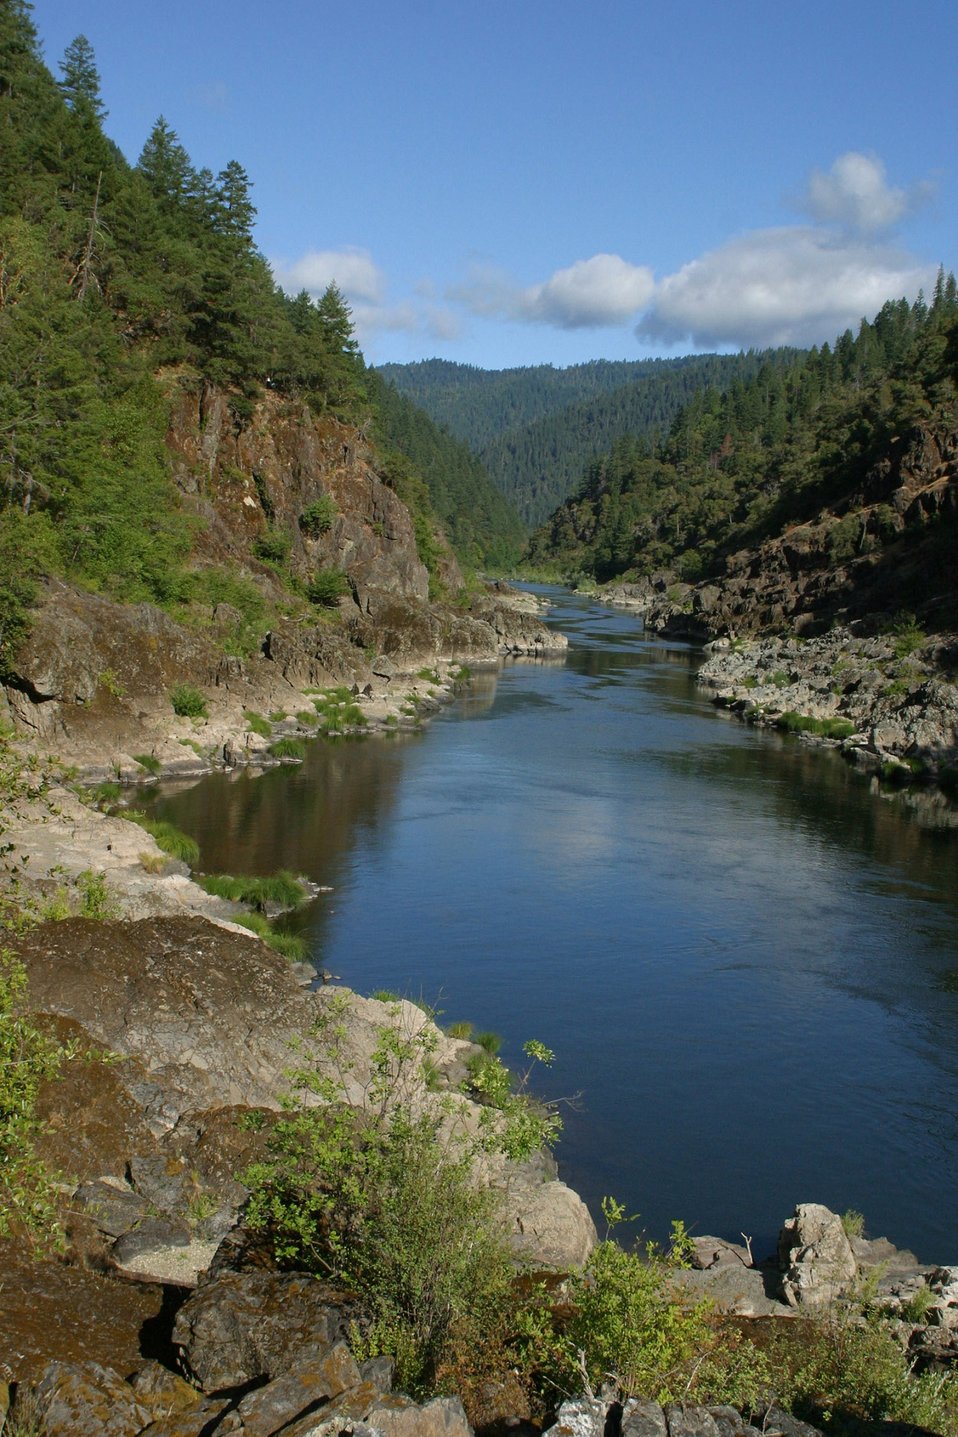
View of the Rogue River from Rainie Falls Trail looking down stream.